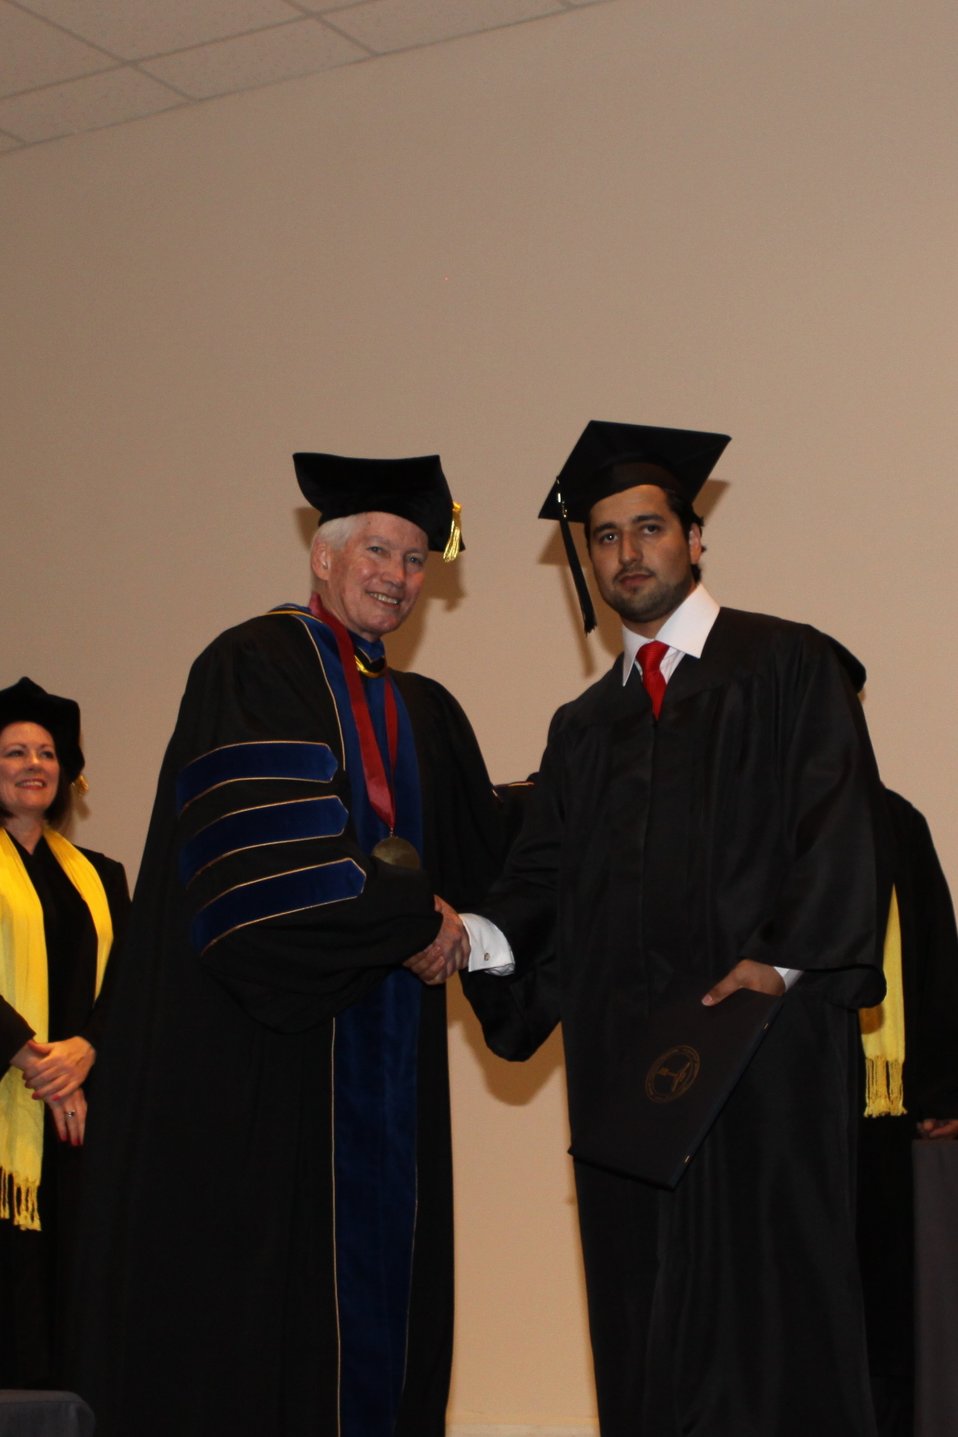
100526 AUAF Graduation 282